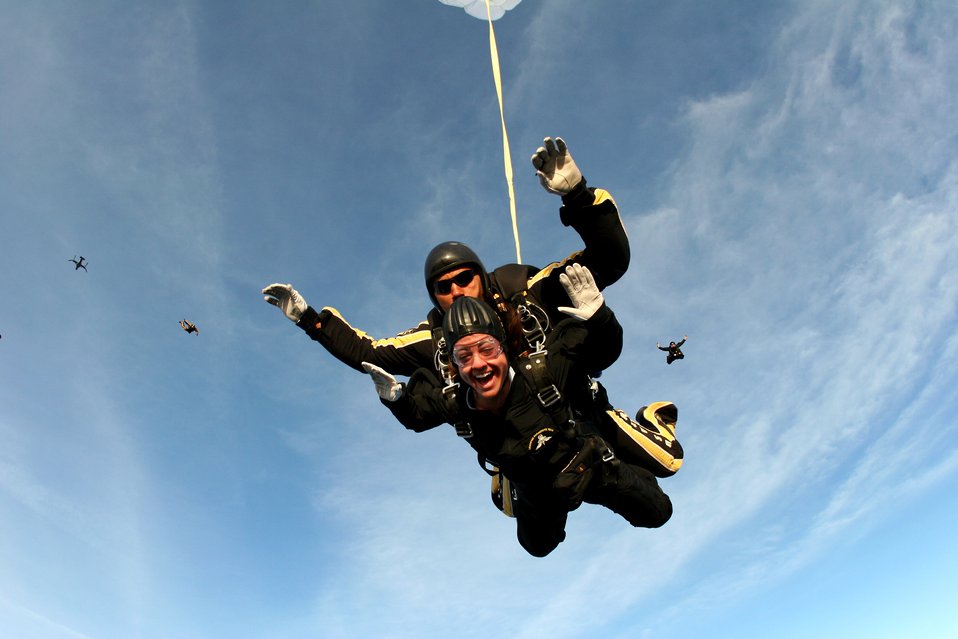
AFSOC helps USSOCOM celebrate 20 years

Melissa Bunting, an executive producer for a Tampa, Fla., radio station, freefalls over nearby MacDill Air Force Base April 26 during a tandem jump with Sgt. 1st Class Michael Elliott of the U.S. Army Golden Knights parachute team. The pair jumped from an Air Force Special Operations Command CV-22 Osprey (far left) from the 8th Special Operations Squadron at Hurlburt Field, Fla.